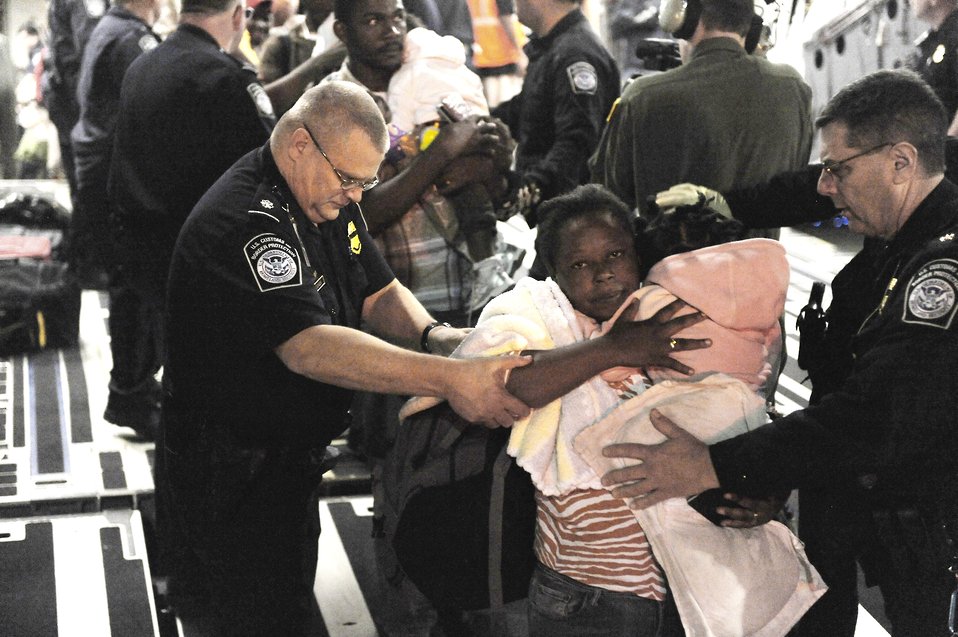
Returning

A U.S. citizen from Haiti is helped down the cargo ramp of a C-17 Globemaster III by customs officials Jan. 20, 2010, at the Orlando International Airport, Fla. The U.S. Air Force is flying U.S. citizens in Haiti back to the United States following the earthquake Jan. 12 that leveled much of the country's infrastructure.